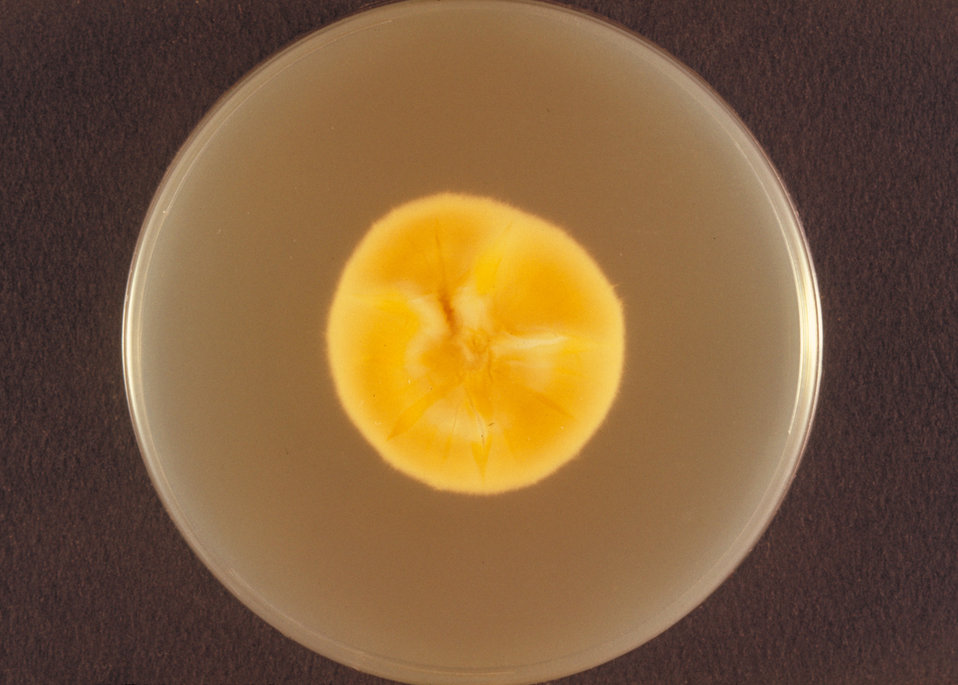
This is the bottom or 'reverse' view of a Sabouraud's dextrose plate culture growing the fungus Microsporum persicolor.